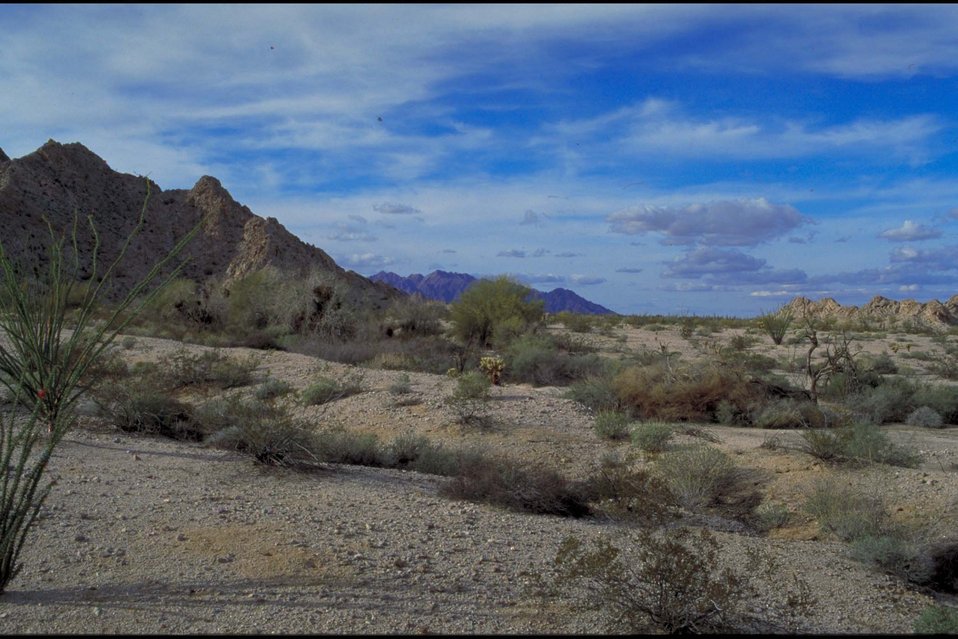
Beautiful Arizona desert